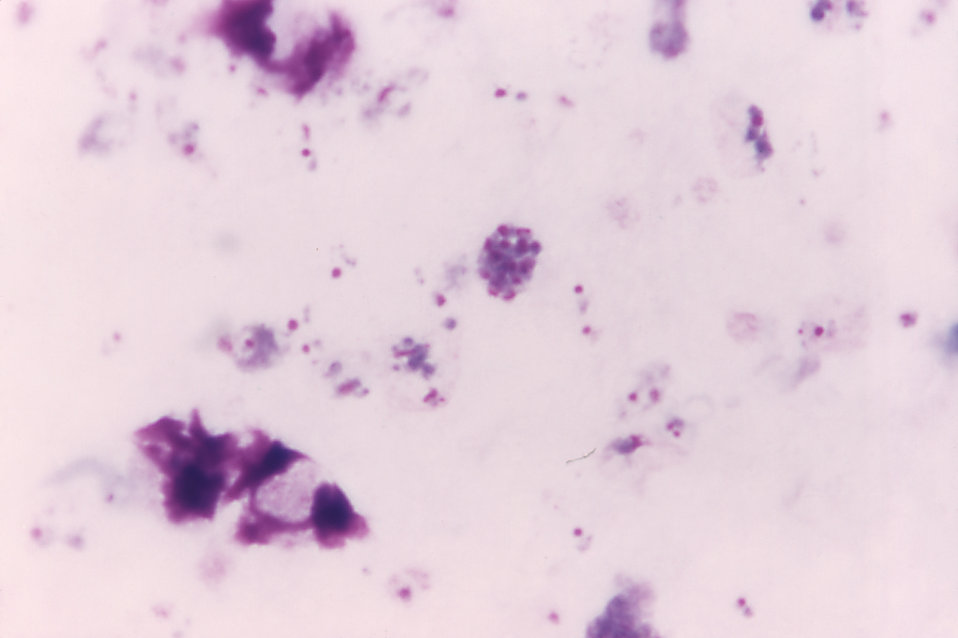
This micrograph of a thick film depicts an immature P. vivax schizont using Giemsa stain; Magnification 1125x.